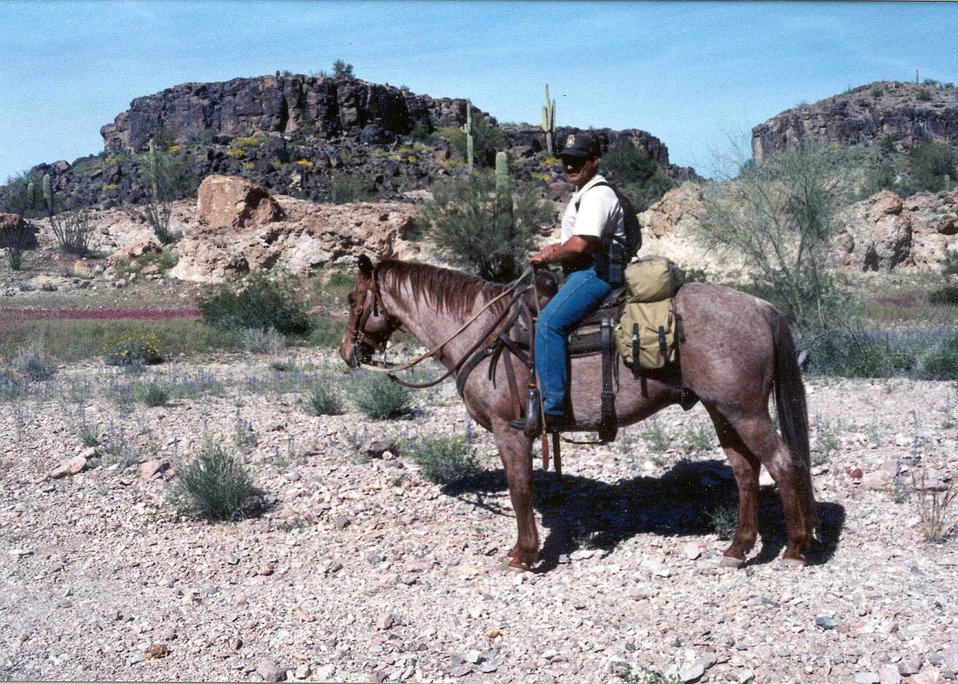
Law Enforcement Ranger riding horseback in the Eagletails Wilderness Area